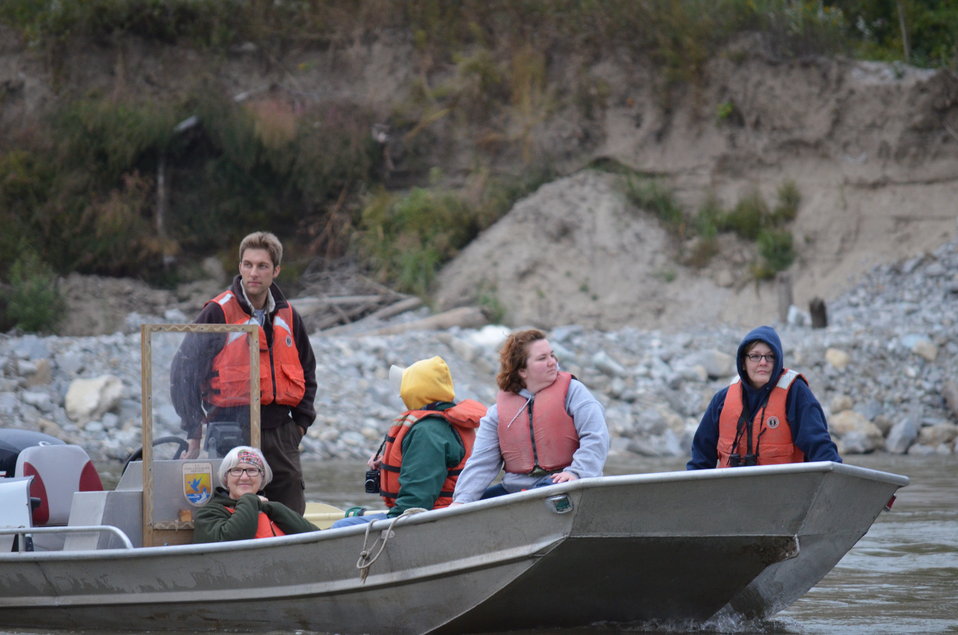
Brisk river breeze

Refuge biologist Jestin Clark with Master Naturalists. USFWS/Ashley Spratt